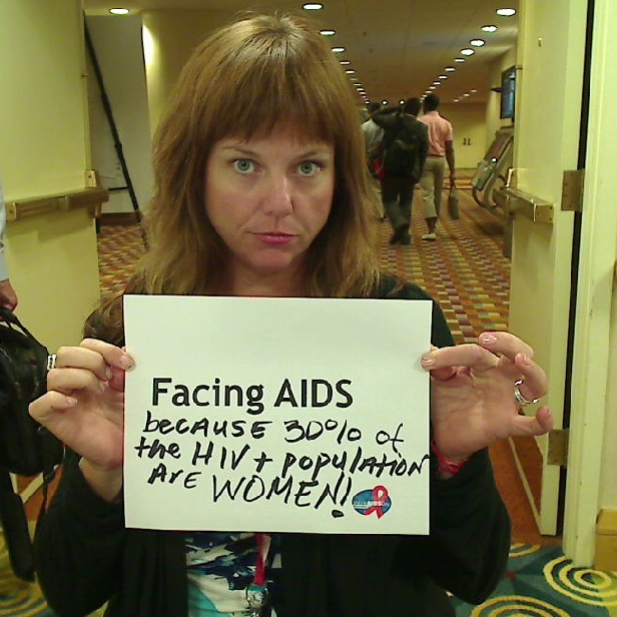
Facing AIDS because 30% of the HIV population are WOMEN!